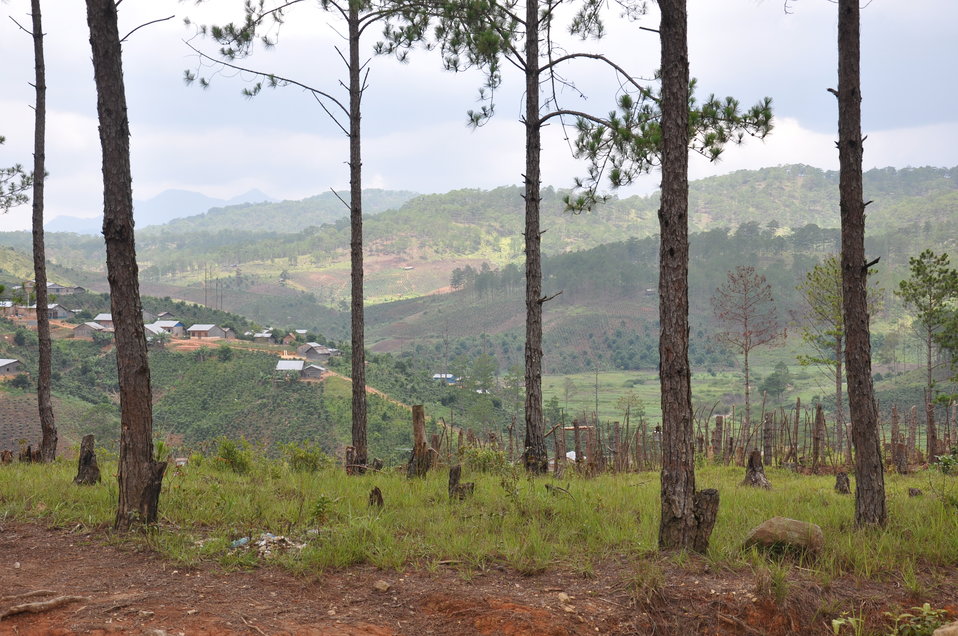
Forests in Vietnam